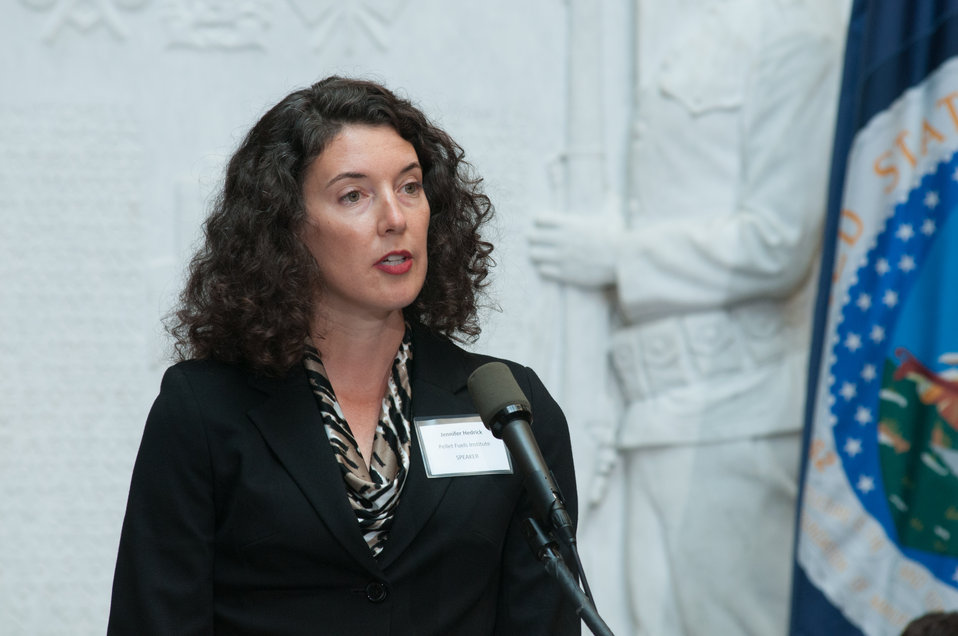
Pellet Fuels Institute Executive, Director Jennifer Hedrick speaks during the U.S. Department of Agriculture (USDA) Wood Energy Memorandum of Understanding, and awarded wood energy grants announcements event, at the USDA Headquarters, in Washington, D.C., on Wednesday, September 11, 2013. Signing the MOU are partnership leaders Biomass Thermal Energy Council, Executive Director Joseph Seymour; Alliance for Green Heat, President John Ackerly, USDA Agriculture Deputy Secretary Krysta Harden; Pellet Fuels Institute Executive, Director Jennifer Hedrick; Biomass Power Association, President and CEO Bob Cleaves, and Secretary Thomas Vilsack who signed it earlier. Moderating the event is Under Secretary for Rural Development Doug O’Brien.
The partnership agreement focuses on promoting wood energy nationwide as a means to address fire risks, bolster rural economic development, improve air quality, and help meet the Obama Administration’s renewable energy and energy efficiency goals. These organizations support the use of wood energy across the scale of users – from residential users, to commercial and intuitional facilities, to industrial production of heat and or electricity to drive businesses and feed the electrical grid.
Under the terms of the five grants announced by Deputy Secretary Harden, private, state and federal organizations will work together to stimulate the development of additional wood energy projects in their states. Collectively, $2.9 million will be spent o this effort -- $1.1 million on federal funds and $1.8 million in non federal funds. For more information o0n the cooperative agreement program, visit na.fs.fed.us.werc/wood-energy/ USDA Photo by Lance Cheung.